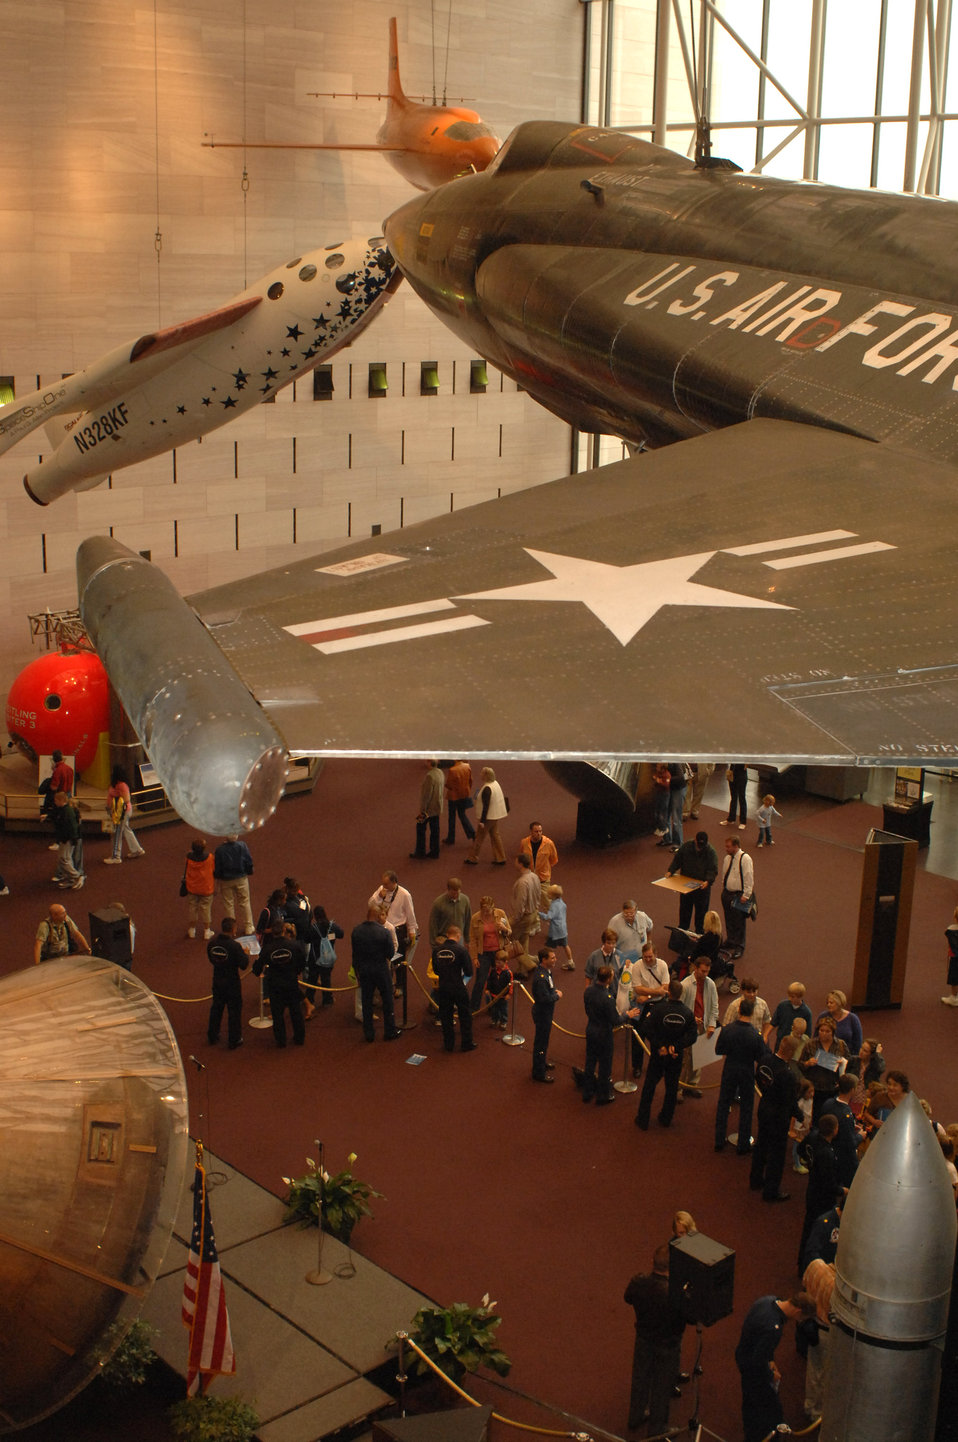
Thunderbirds visit Smithsonian

The Air Force Thunderbirds demonstration team was at the Smithsonian Air and Space Museum Oct. 11 in Washington, D.C. Team members signed autographs and were at the Smithsonian as part of a week-long series of events that culminated with the opening of the Air Force Memorial.